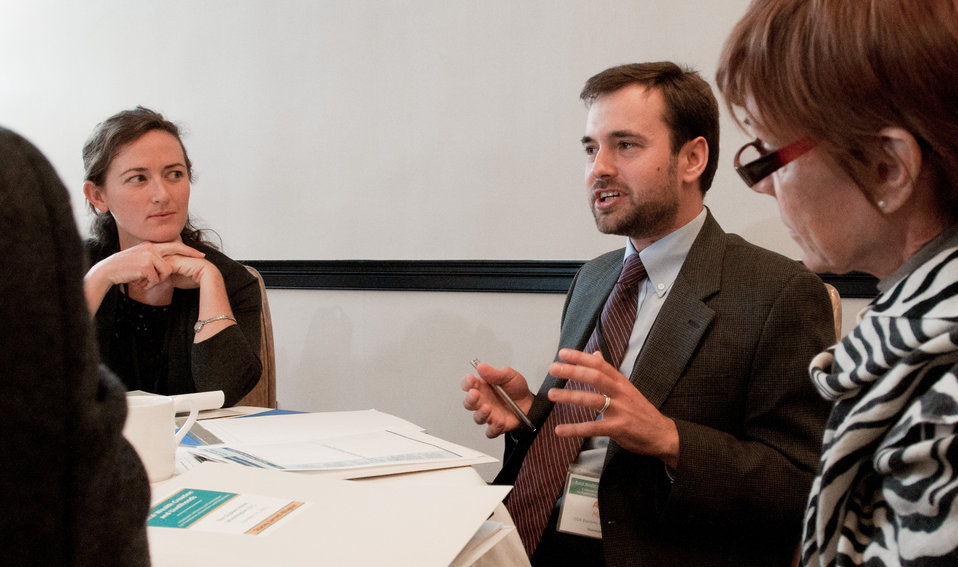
U.S. Department of Agriculture Economic Research Service Research Economist Alexander Marre, discusses a topic with his group of other participants, during the general session of the Rural Wealth Creation and Livelihoods national conference for practitioners, researchers and policymakers, held at the Dupont Hotel, Washington DC, on Monday October 3, 2011. USDA partnered with the Ford Foundation to sponsor the conference.